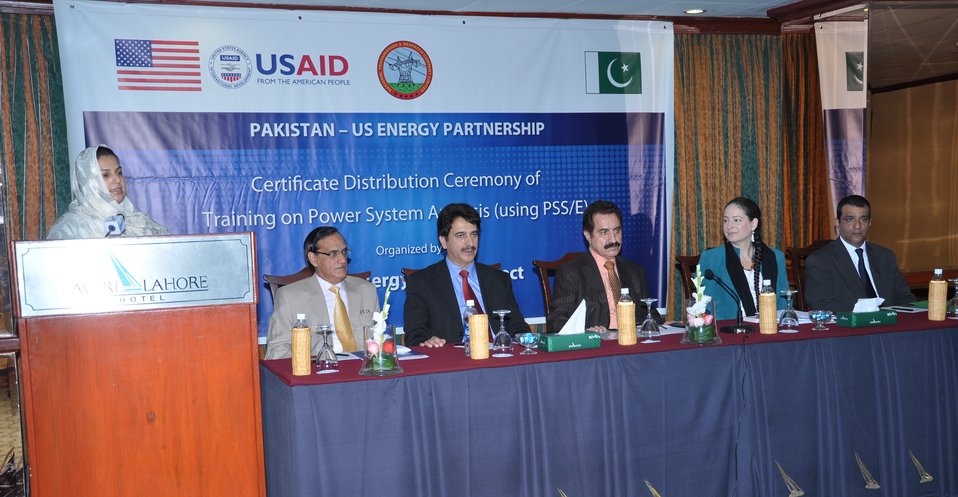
Certificate Distribution Ceremony of Training on Power System Analysis

Rabia Attiq, Assistant Manager, NTDC, expressing her views about the Power System Analysis Training in a ceremony organized in Lahore on February 28, 2012.
The Power System Analysis Training was organized by USAID's Energy Policy Project as part of its activities for the power sector entites capacity building program and supporting energy sector reforms.